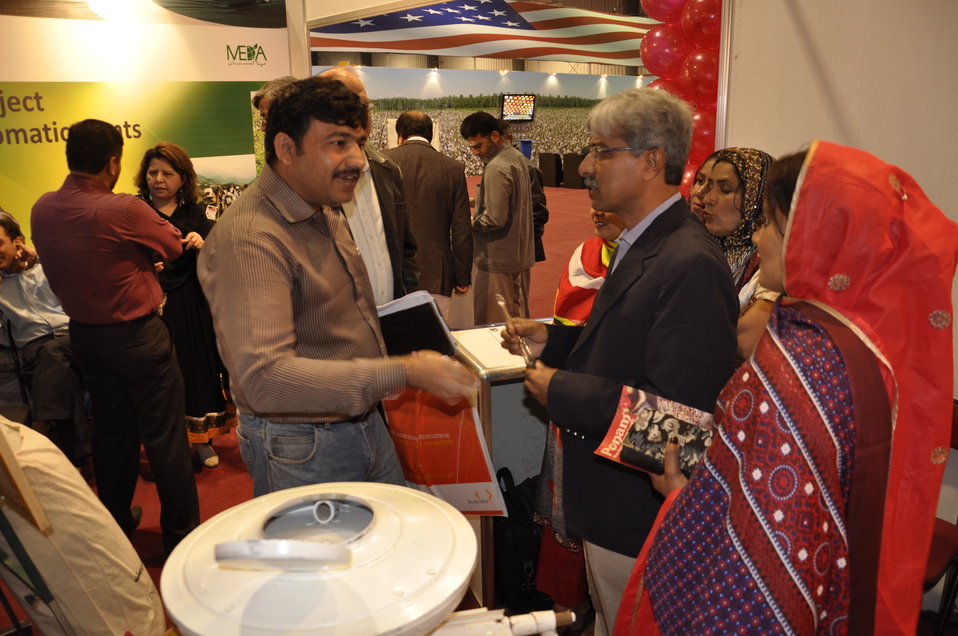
Public taking interest in the USAID's Dairy initiative at the Entrepreneurs Stall